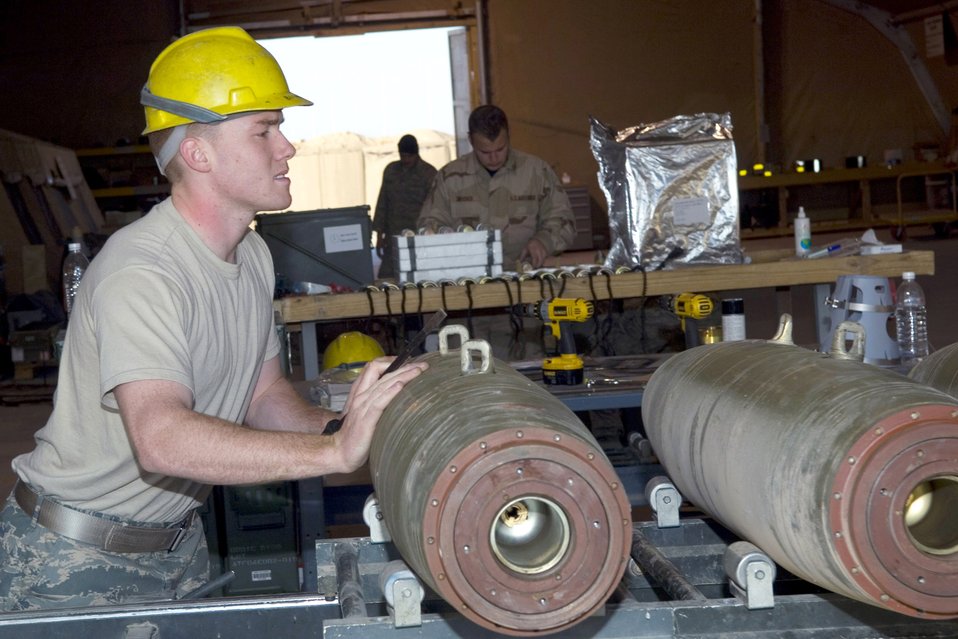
Ammo keeps fighters supplied in quest for Iraqi freedom

Airman 1st Class Justin Porter pushes a 500-pound MK-82 bomb down the munitions assembly conveyor for build-up Jan. 17 at Balad Air Base, Iraq. Airman Porter is a 332nd Expeditionary Maintenance Squadron Ammunitions Flight conventional maintenance crew member and deployed from Spangdahlem Air Base, Germany.